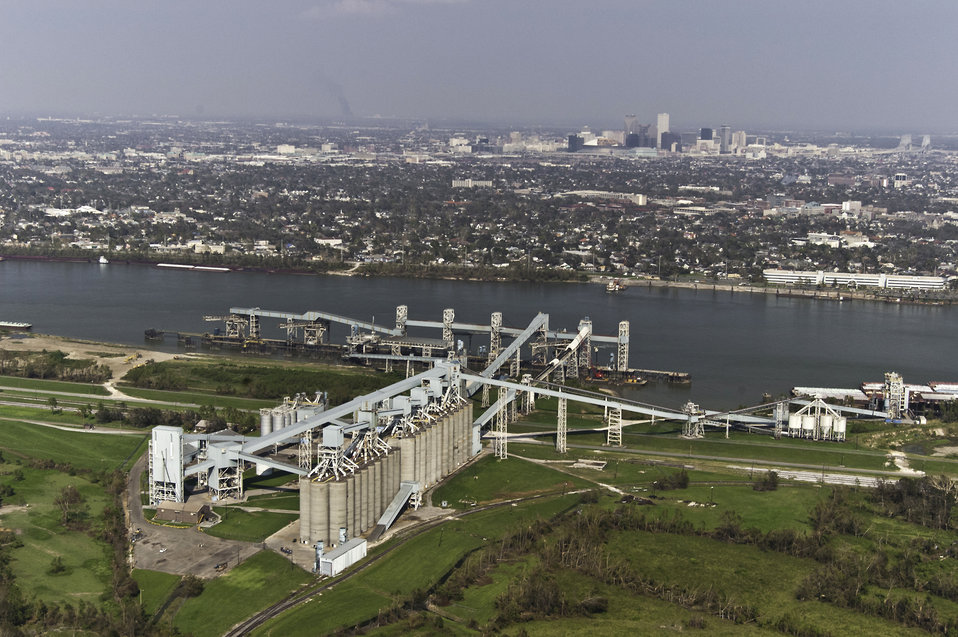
A grain storage facility fills a barge with grain for transportation on the Mississippi River in the Port of New Orleans, New Orleans, LA on Sept. 9, 2005.